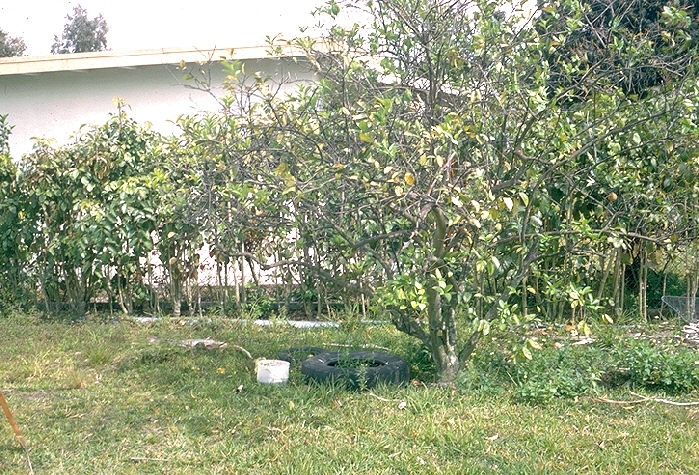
Bucket and tire in shaded area near home. Choice potential mosquito breeding site.